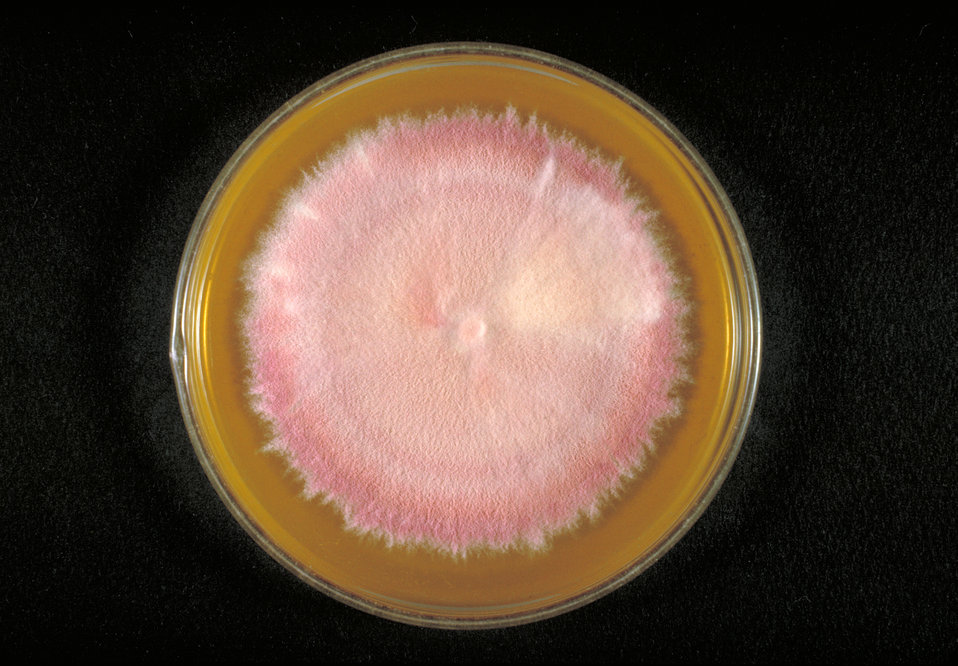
This Sabouraud's dextrose agar plate culture is growing T. terrestre fungus, strain X-231 producing a red pigment.